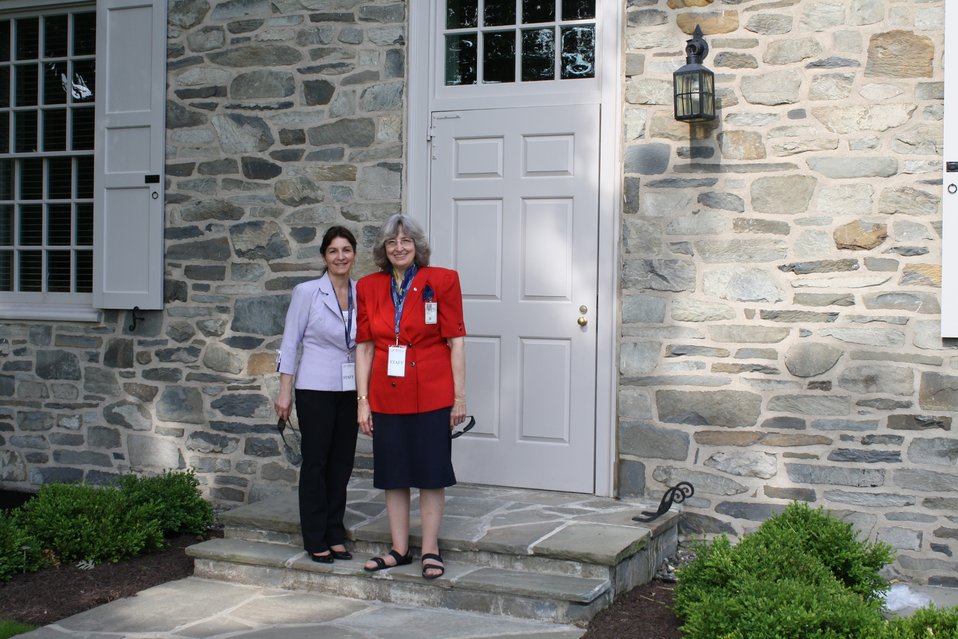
JoAnn Morse and Virginia Lewick at the FDR Library's rededication.; Location: Franklin D. Roosevelt Presidential Library, Hyde Park, New York